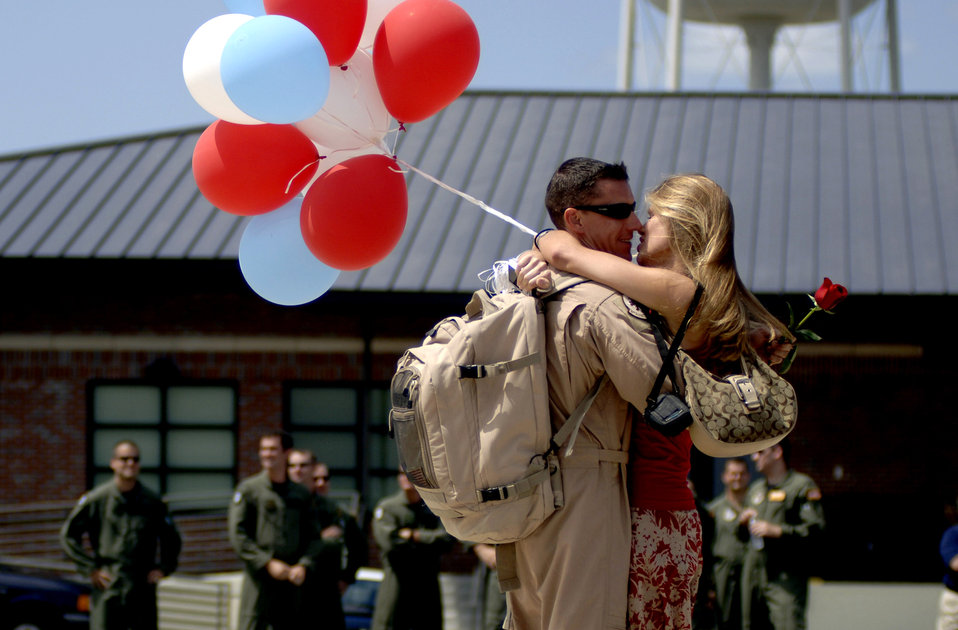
Nothing can be finer than to be in Carolina

Maj. Scott Berndt and his fiance, Ashley Good, are reunited after his return from a deployment to Southwest Asia Sept. 3 at Charleston Air Force Base, S.C. More than 117 Airmen from the 16th Airlift Squadron returned to Charleston AFB after being deployed for more than four months. Captain Berndt is a 16th AS C-17 pilot.